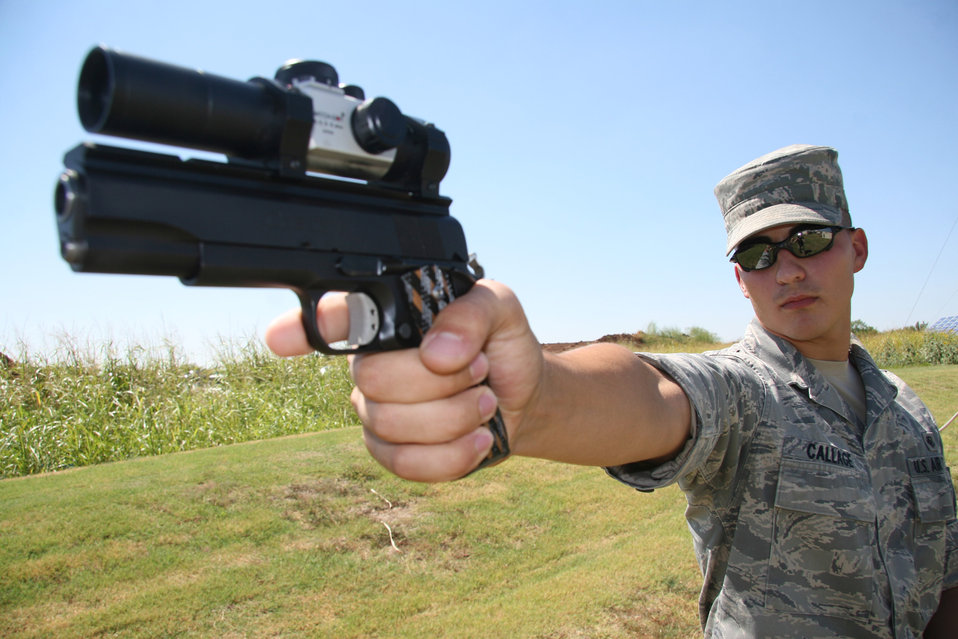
Tinker Airman shoots for Olympic gold

Airman 1st Class Alex Callage was recently accepted into the Air Force's World Class Athlete Program and will begin training at the Olympic Training Center at Peterson Air Force Base, Colo., for a spot on the 2012 U.S. Olympic team.